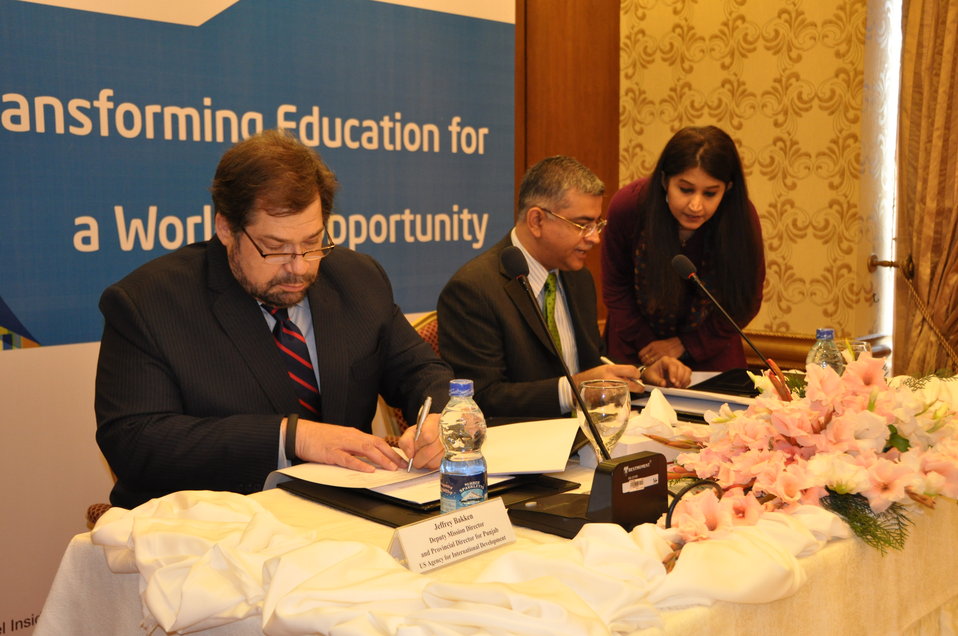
Intel MoU1

USAID Punjab Provincial Director Jeffery Bakken and Intel Pakistan Country Manager Naveed Siraj sign an agreement that will help improve education in Punjab through cooperative efforts between USAID and Intel Pakistan.